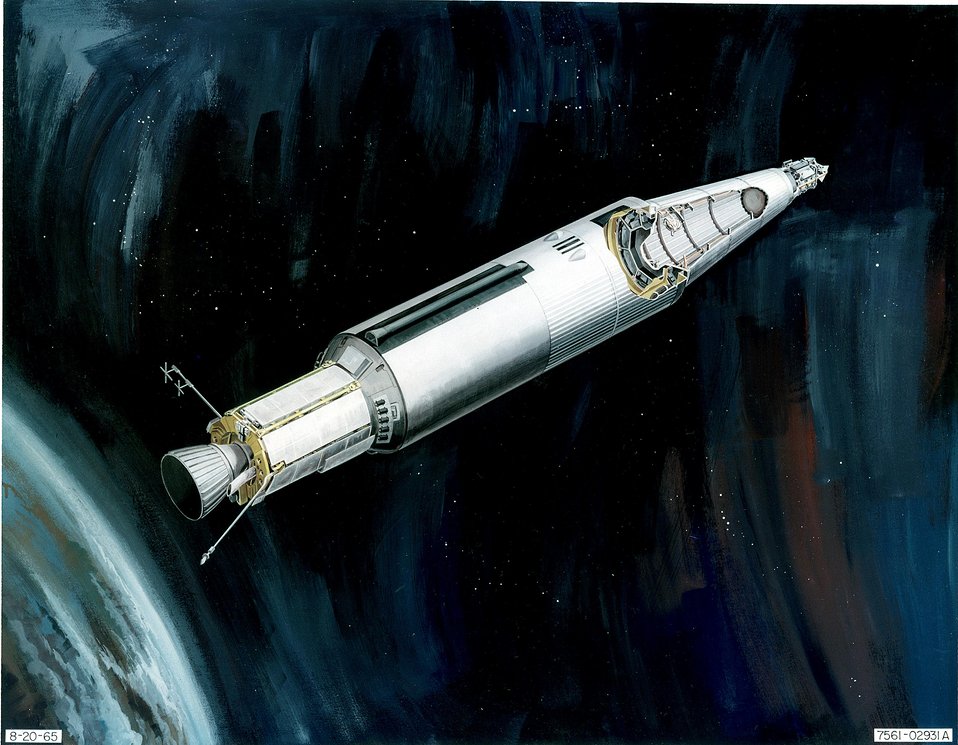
SNAP 10A/ Agena-snapshot configuration